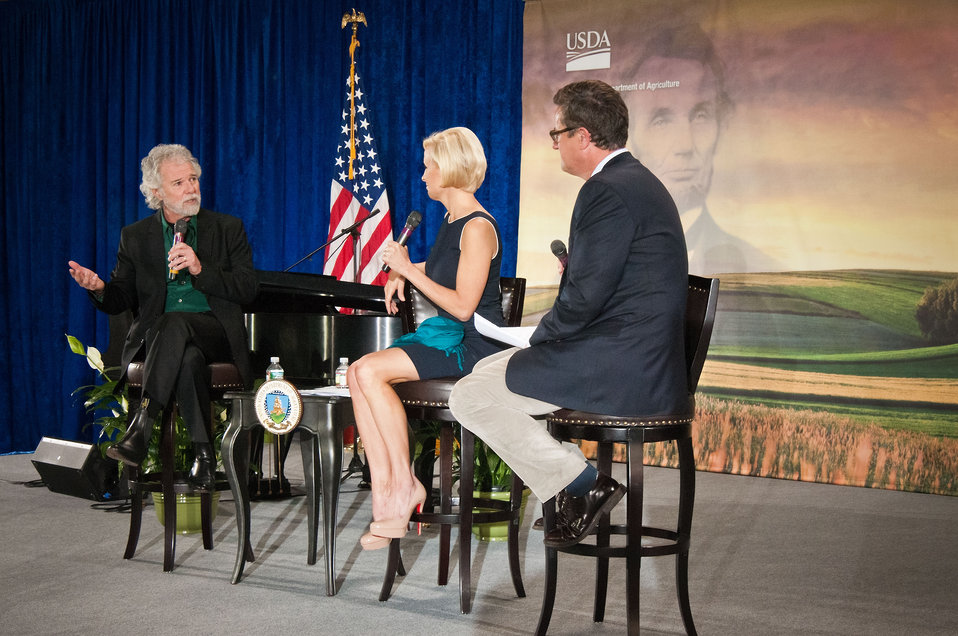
From left: Chuck Leavell, Rolling Stones keyboardist, conservationist and Georgia tree farmer, Mika Brzezinski and Former Congressman Joe Scarborough (R-Fla.) hosts of MSNBC’s “Morning Joe' and Masters of Ceremony listen to Leavell discuss the importance conservation and our National Forests at the United States Department of Agriculture's 150th Anniversary celebration in Washington, D.C., Tuesday, May 15, 2012.